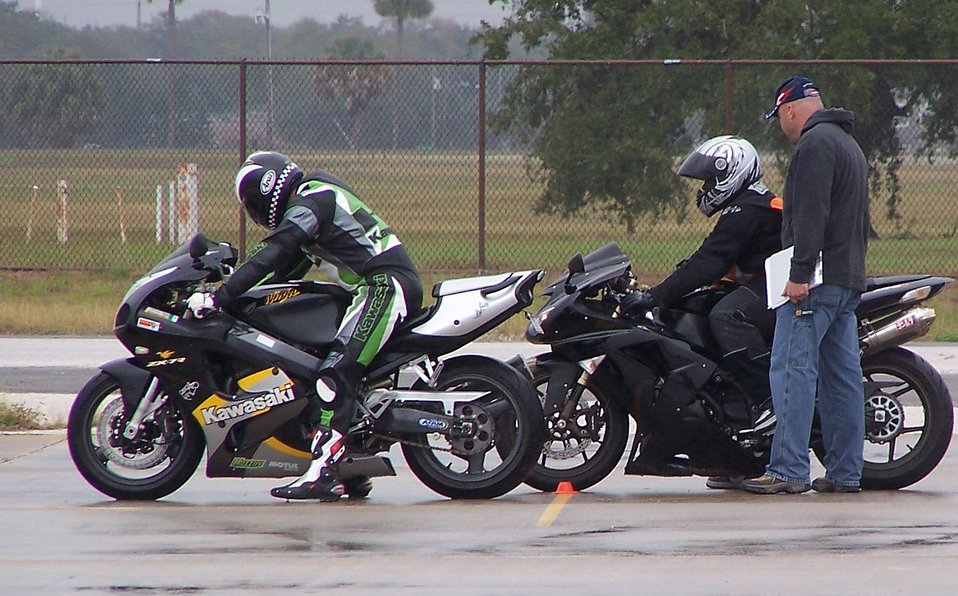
Officials emphasizes motorcycle safety across force

Motorcycle accidents are on the rise throughout the Department of Defense and officials want to stress safety as the summer months approach. The Air Force holds courses for all Airmen who ride motorcycles to promote safety and encourage safe riding habits.